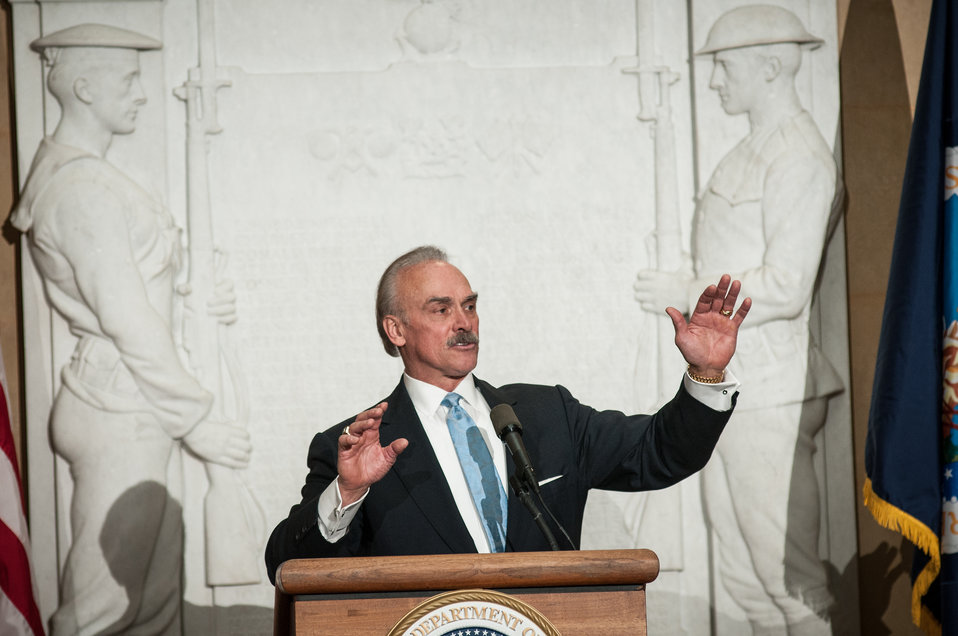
Keynote speaker and former National Football League Pittsburgh Steelers halfback Robert Patrick 'Rocky' Bleier spoke about the importance of milk in his childhood growth, and recounted some of his historic game-winning football play, during a luncheon with dairy producers, Dairy Management, Inc., (DMI) and other stakeholders from the dairy producers industry, at the Whitten Building Patio in Washington, D.C. on Tuesday, Feb. 26, 2013.